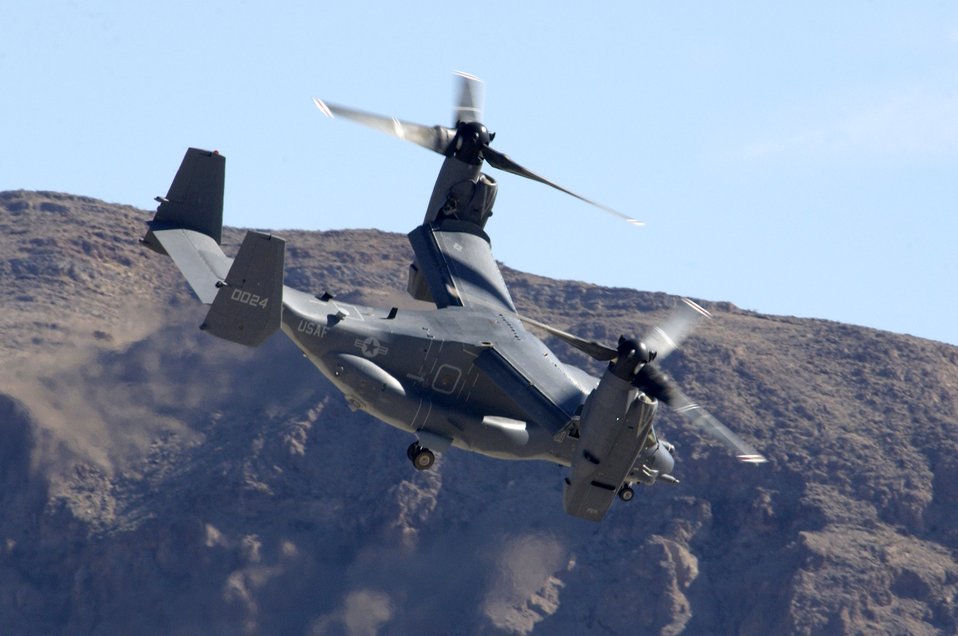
Aviation Nation at Nellis

A CV-22 Osprey performs a fly-over during Aviation Nation 2006 Nov. 12 at Nellis Air Force Base, Nev. Aviation Nation has been called one of the most diverse, entertaining and well run air shows in America, and was held Nov. 11 and 12.